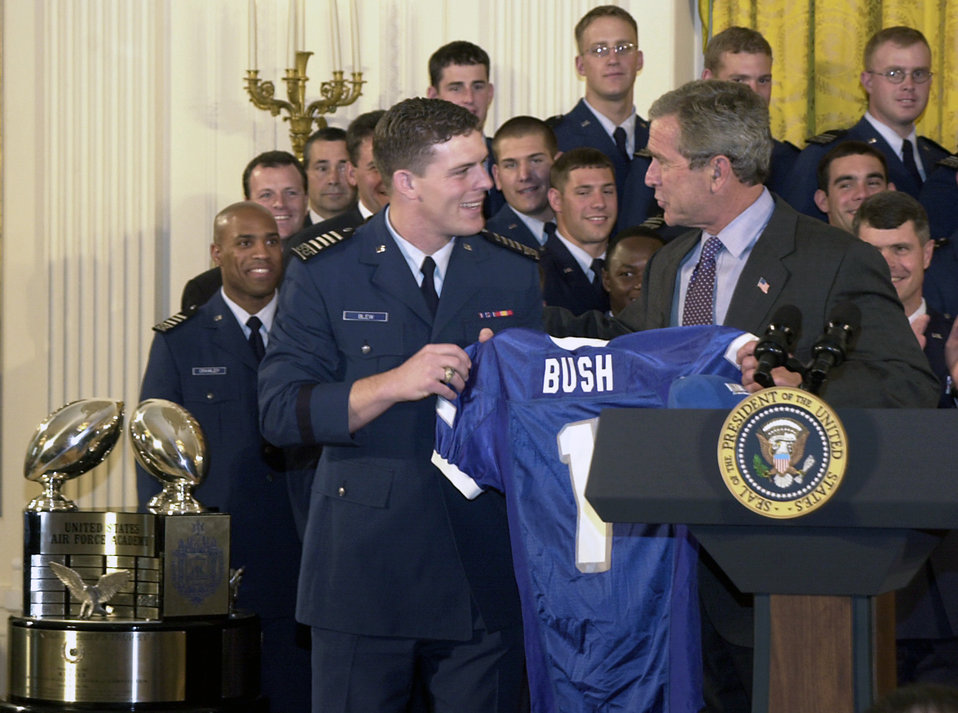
Academy presentation

WASHINGTON -- Air Force Academy Cadet 1st Class Bryan Blew presents President Bush with a personalized football jersey during the Commander-in-Chief's Trophy ceremony May 16 in the White House.